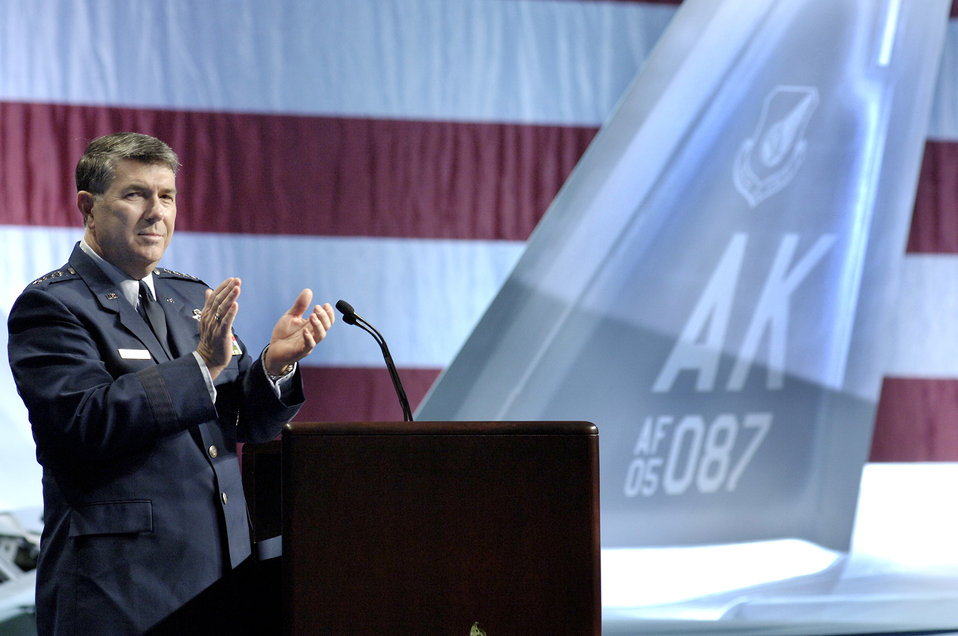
First F-22 bound for Pacific unveiled

Gen. Paul V. Hester speaks during the acceptance ceremony for Pacific Air Force's first F-22 Raptor Feb 12 at Marietta, Ga. General Hester is the Pacific Air Forces commander. This F-22 is the first of several that will be assigned to PACAF at Elmendorf Air Force Base, Alaska. The F-22's combination of stealth, supercruise, maneuverability, and integrated avionics, coupled with improved supportability, represents an exponential leap in warfighting capabilities.